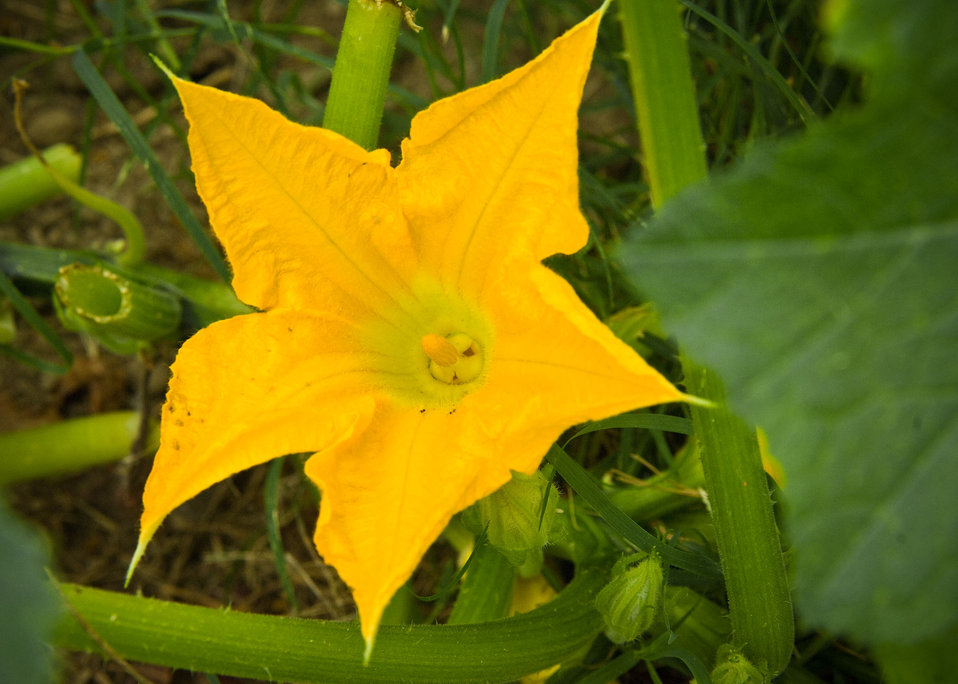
A Summer Squash blossom in The People's Garden at the U.S. Department of Agriculture. USDA Photo 09di1541-12